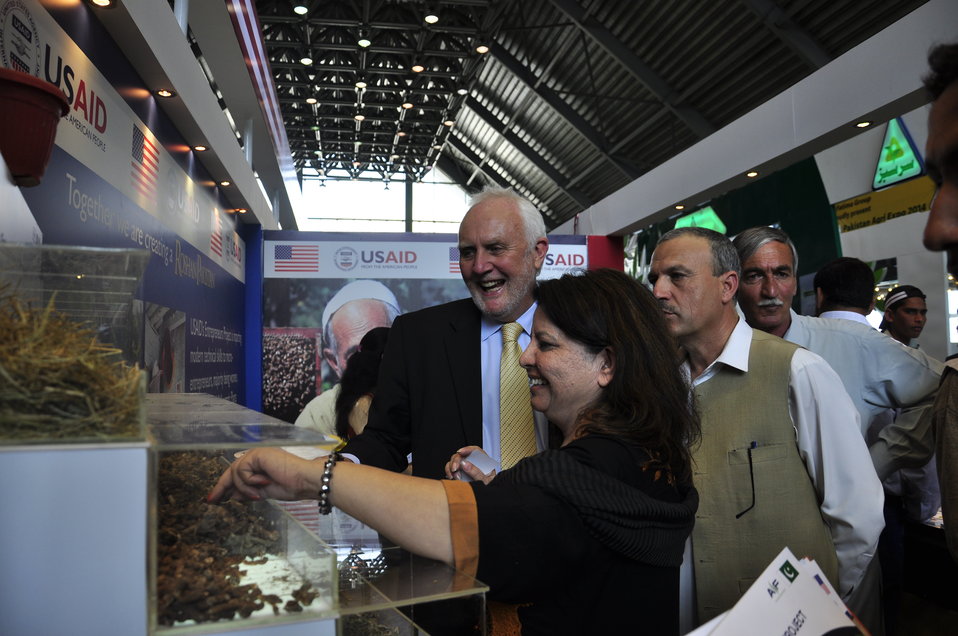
Australian High Commissioner, Mr. Peter Heyward while interacting with the team of USAID's Entrepreneurs Project at Dawn Sarsabz Pakistan Agri Expo.